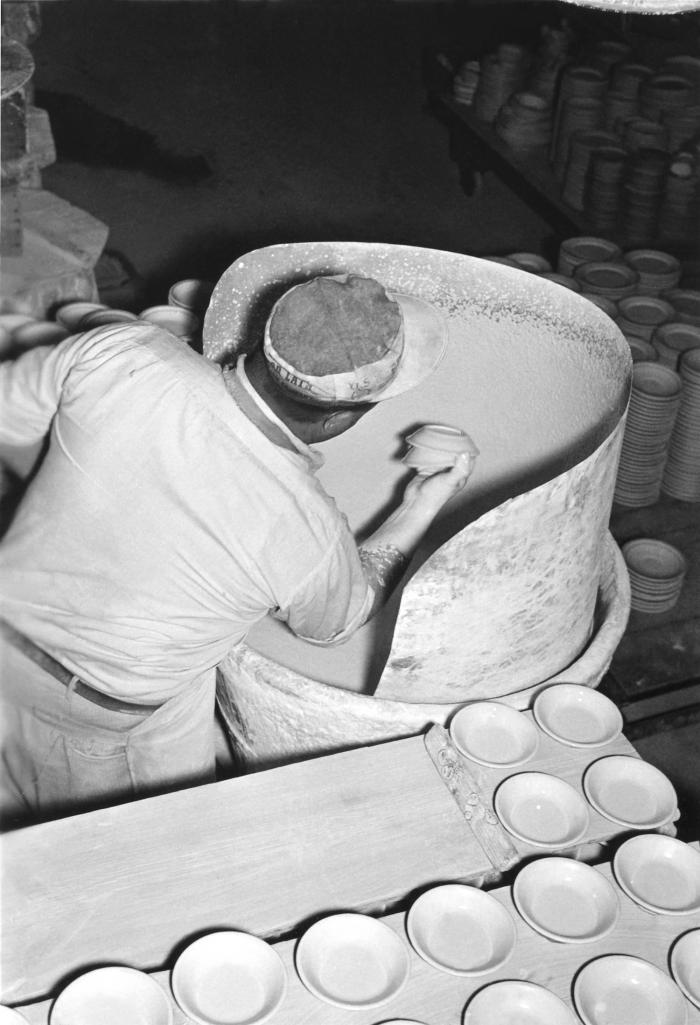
Provided by the Center for Disease Control's (CDC), National Institute for Occupational Safety and Health (NIOSH), this historic image depicted a male industrial worker who was inside a West Virginia ceramics factory, seen here as he was hand-dipping ceramic pieces into 'slip', which is a liquified clay 'soup', during the process of creating what appeared to be dishes. Working within a clay-processing environment, workers should have taken precautions against the possibility of inhaling airborne particulates, which would lead to the chronic pulmonary disease known as pneumoconiosis, or silicosis, or more commonly known as 'grinders' disease', characterized by the formation of nodular fibrotic changes in the lungs. Note that this man was not wearing a filtered breathing mask, thereby, increasing his chances of contracting silicosis. The image was published in the 'Public Health Bulletin', No. 244, 1939.